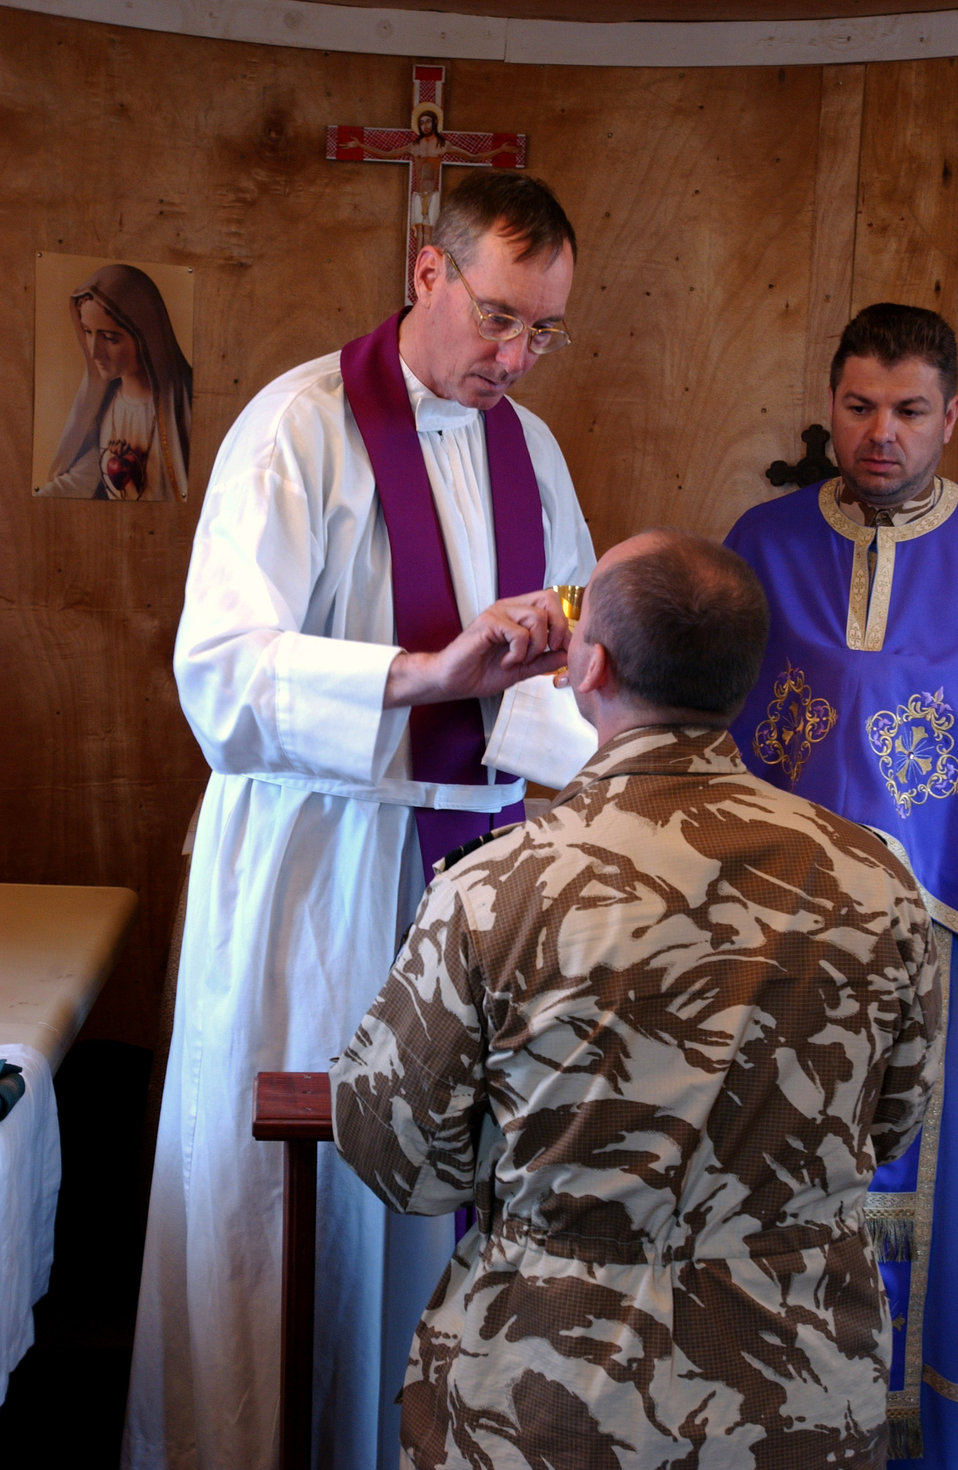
Air Force chaplain celebrates Mass for Romanians in Italian

Romanian Army Staff Sgt. Claudiu Pujky receives the bread from Chaplain (Maj.) Timothy Hirten during Holy Communion Dec. 5 at the Romanian chapel at Ali Base, Iraq. Chaplain Hirten volunteers his time to help lead a Catholic Mass for coalition forces at the Romanian camp. The chaplain is assigned to the 407th Air Expeditionary Group Chapel and is deployed from Altus Air Force Base, Okla.